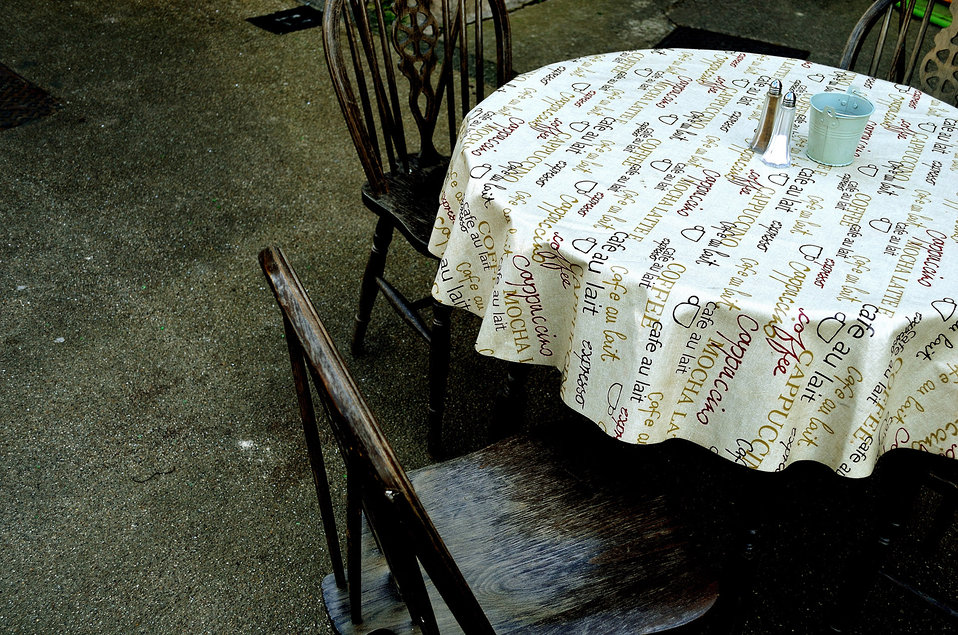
Sitting at the table.